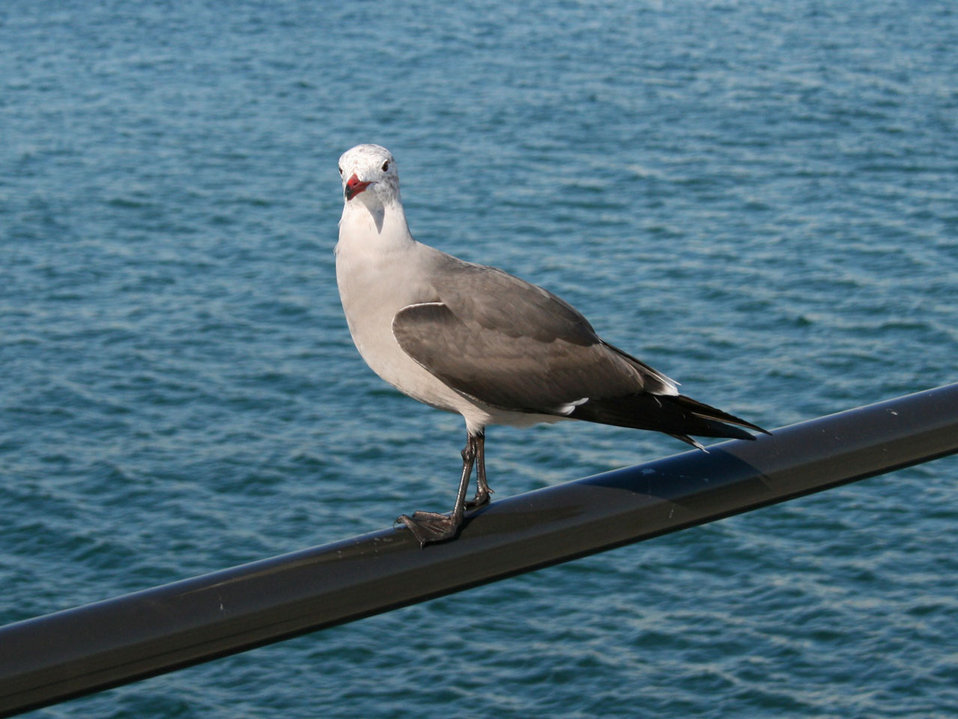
Seagull perched on pier railing

Shot on the huntington beach pier, huntington beach, ca on 12 dec 2007.